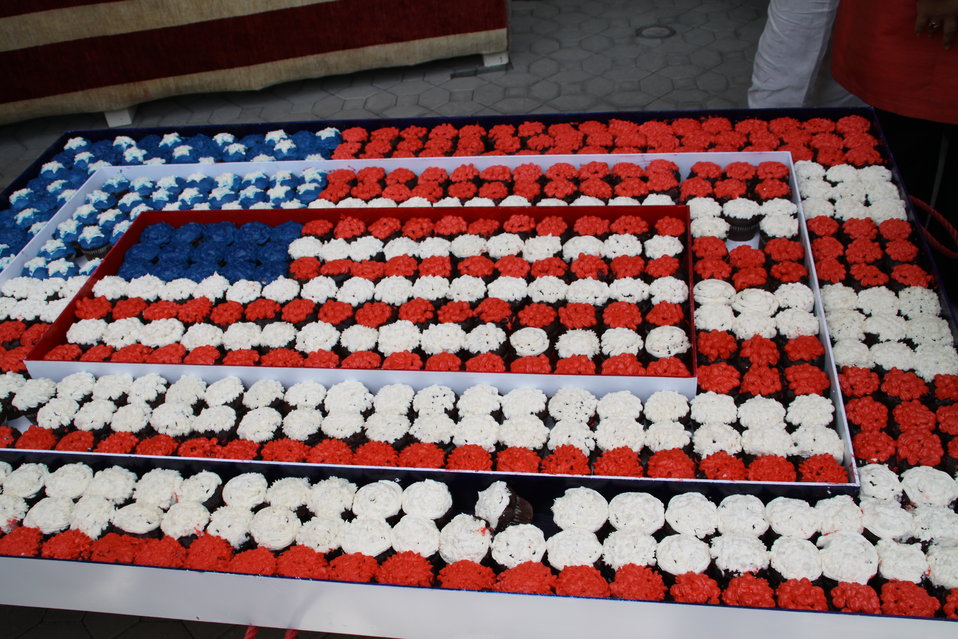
Kabul Official July 4th Celebration